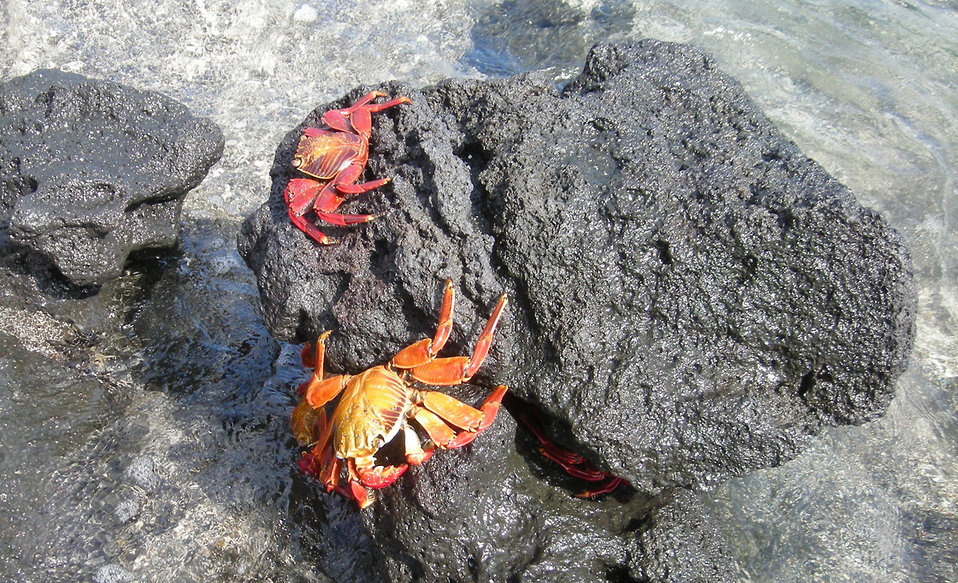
Sally lightfoot crabs

Colorful crabs on galapagos island, april 2011.